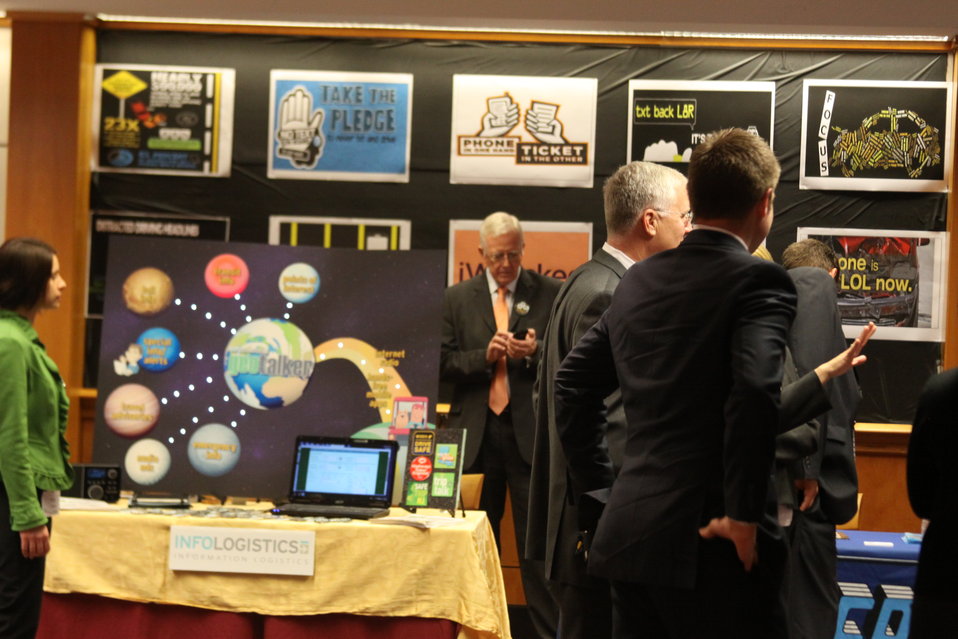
Distracted Driving Technology Showcase April 19, 2013